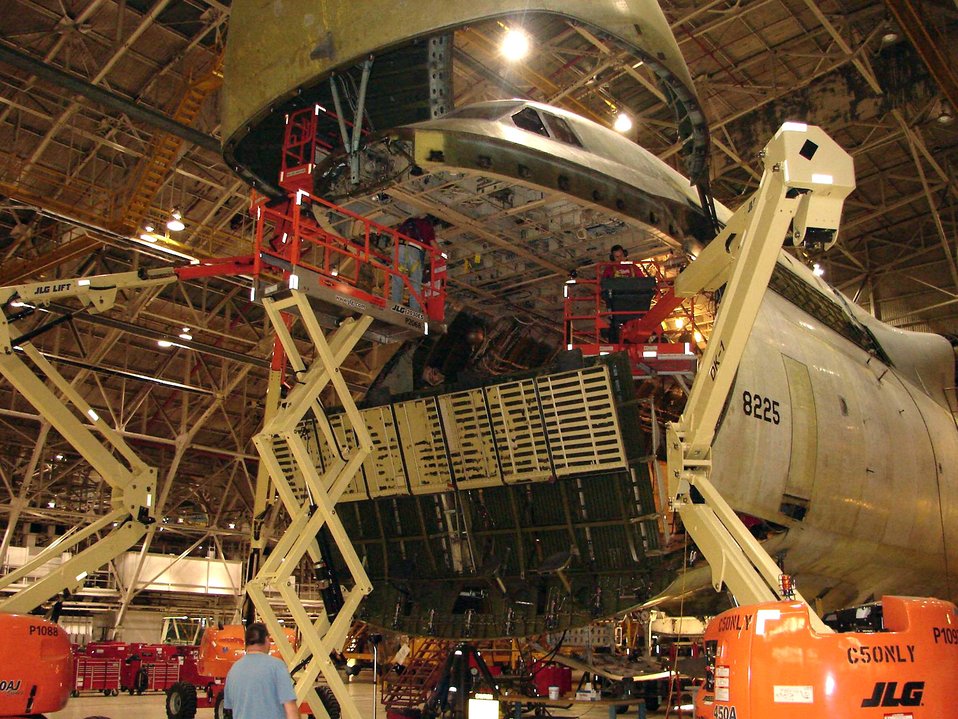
Streamlining maintenance operations

The Warner Robins Air Logistics Center at Robins Air Force Base, Ga., received the 2006 Franz Edelman Award for Achievement in Operations Research on Monday, May 1, 2006, for its use of operations research to streamline maintenance procedures for the C-5 Galaxy. Using innovative management processes, the time required to repair and overhaul the C-5 was reduced 33 percent.